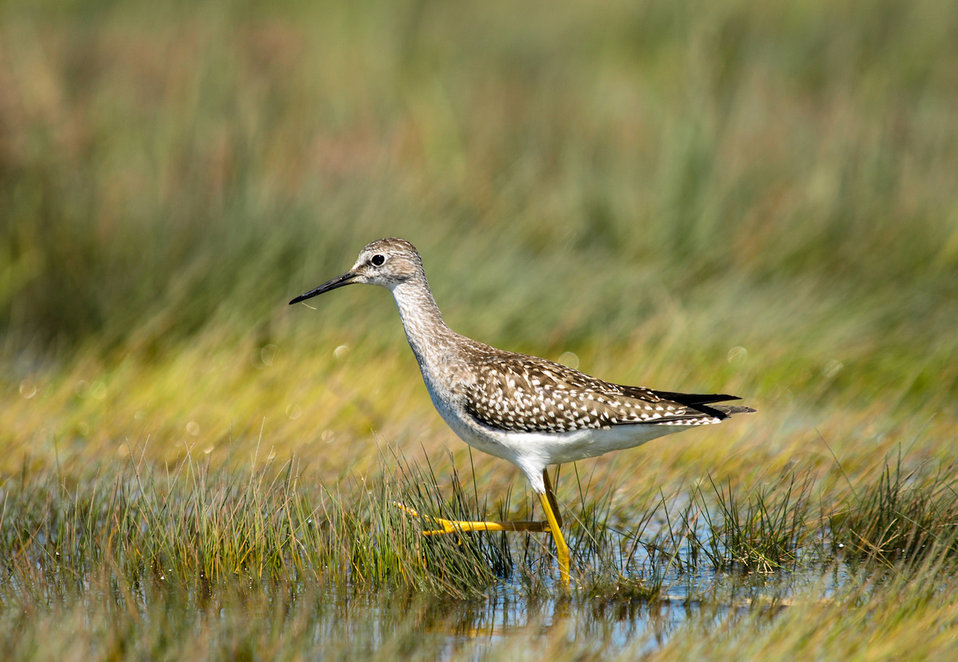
Lesser yellowlegs on tidal marsh at Rachel Carson National Wildlife Refuge.